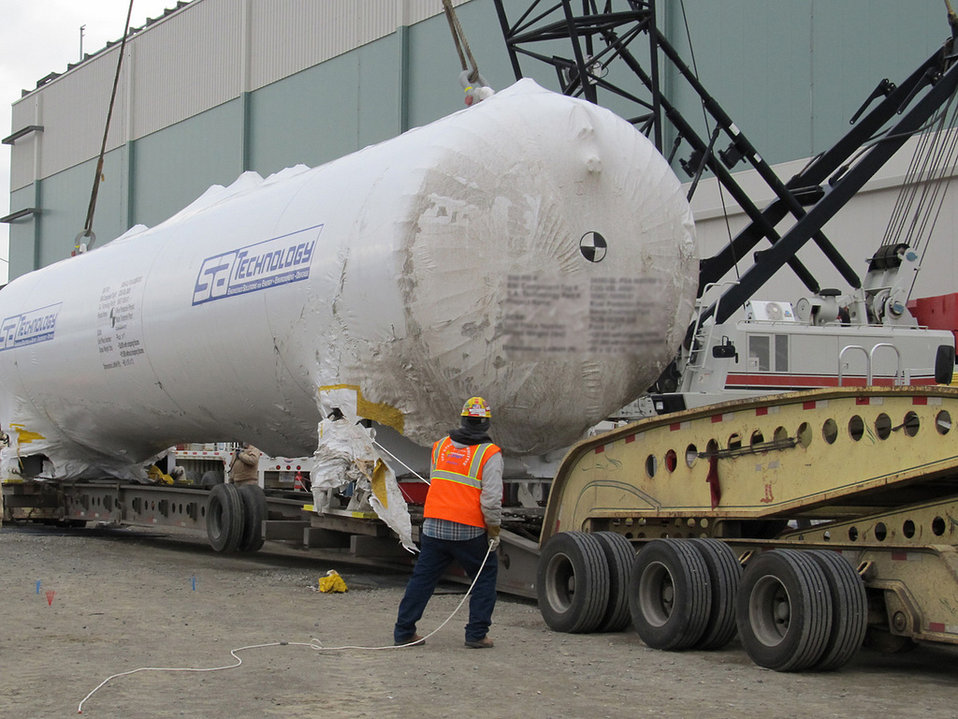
The Hanford Waste Treatment Plant received an enormous nuclear-quality vessel that will be essential to the Low-Activity Waste (LAW) Facility's Container Decontamination System.
The vessel will store carbon dioxide that will be used to clean the outside of filled low-activity waste containers before they leave the facility.